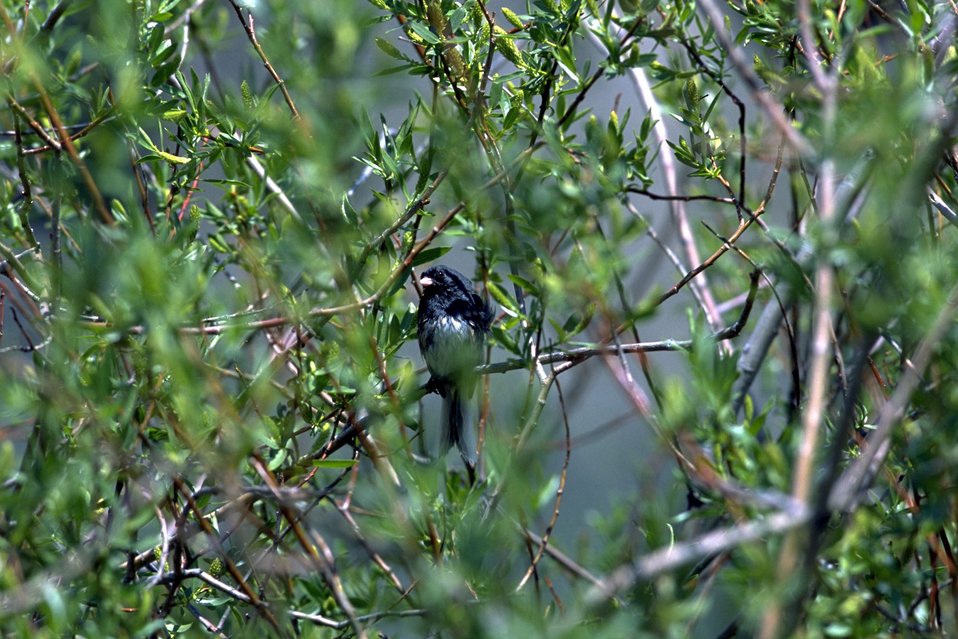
Bird in the brush in the Big Hole Valley